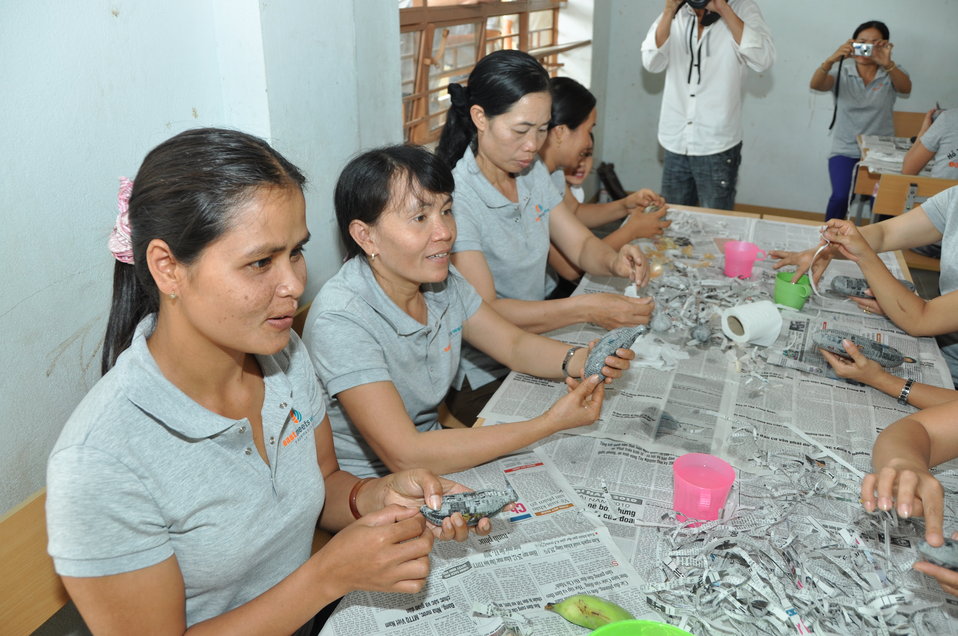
USAID and EMW support teacher training for young ethnic minority children in Kon Tum, Vietnam